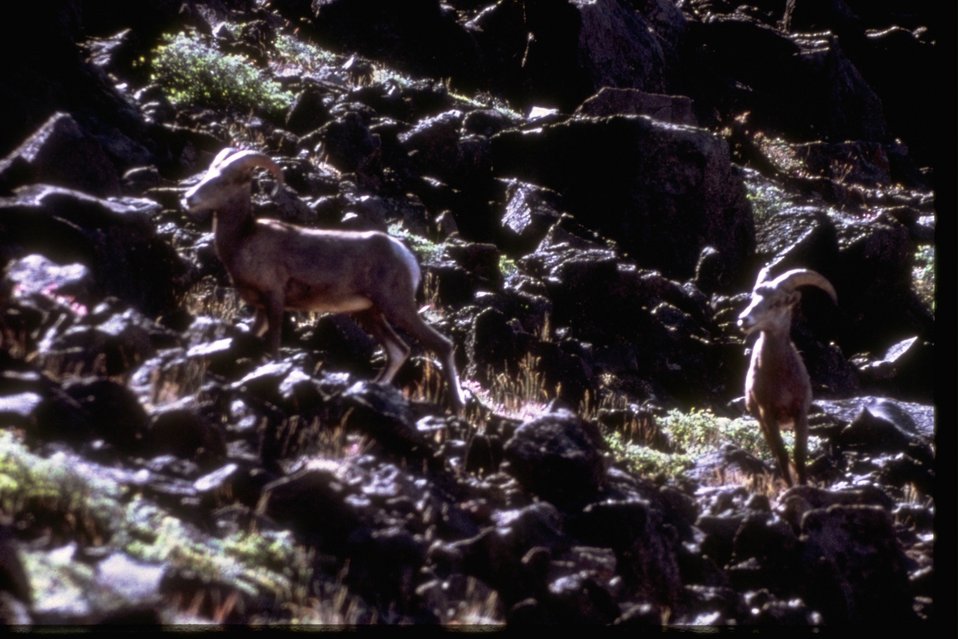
Two Mountain Sheep climbing up rocky hillside.